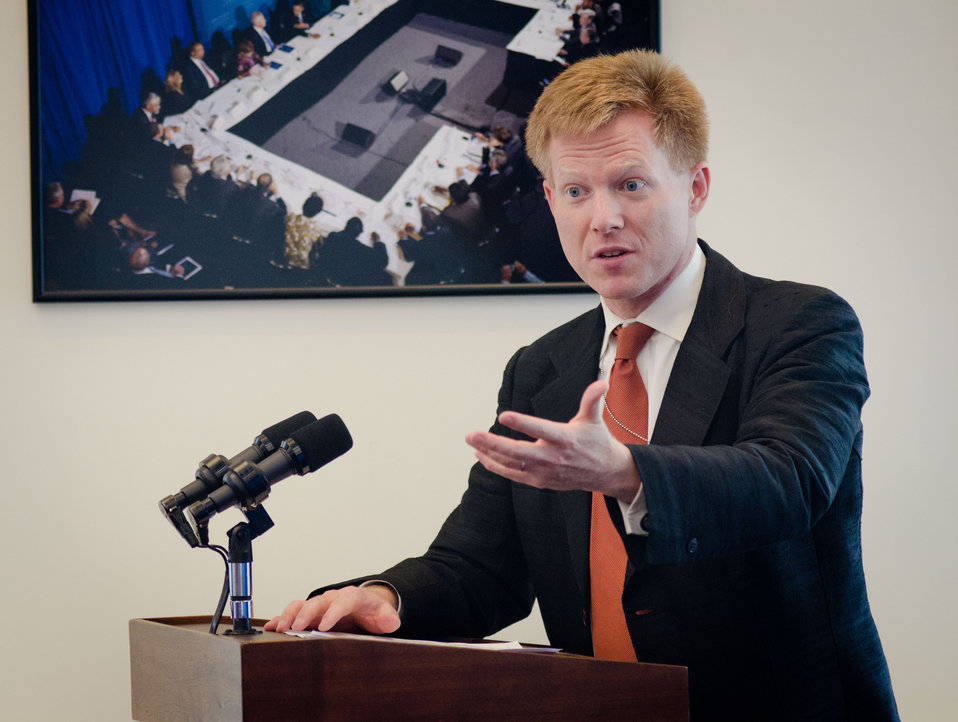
White House Domestic Policy Council Office of Faith-Based and Neighborhood Partnerships Senior Policy Advisor Max Finberg hosted the White House Champions of Change Strengthening Food Security at Home and Abroad Event held at the White House on Thursday, September 6, 2012, in Washington, D.C.